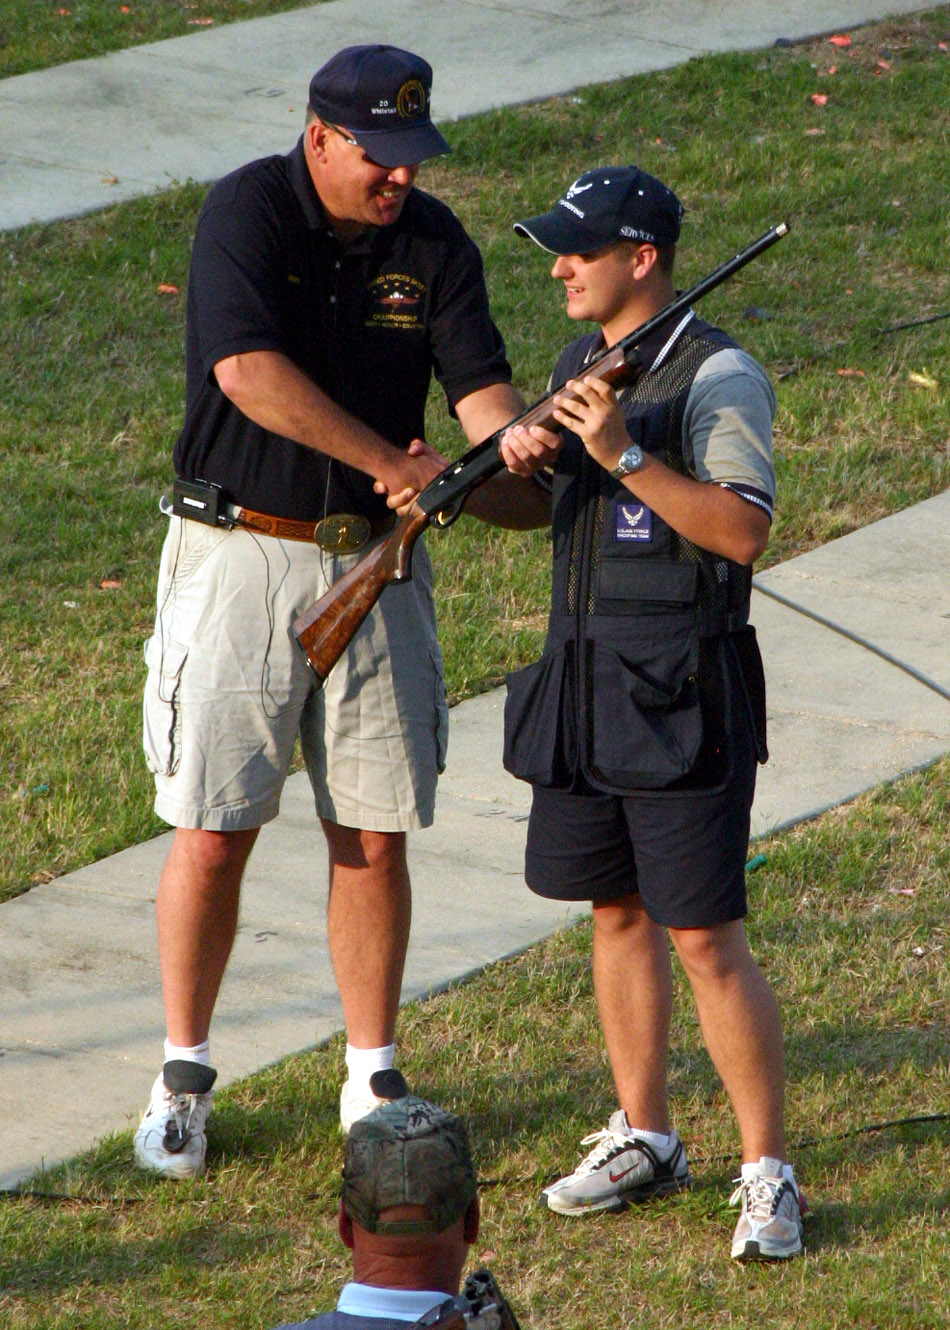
Skeet shooting award winner

SAN ANTONIO (AFPN) -- Airman 1st Class Christopher Ashley, an Air Force Skeet Team shooter, accepts his award as the Armed Services High Overall Champion during the 2005 Armed Services Skeet Championship in May. Airman Ashley is from Davis-Monthan Air Base, Ariz. He went on to win seven more individual awards during the event.